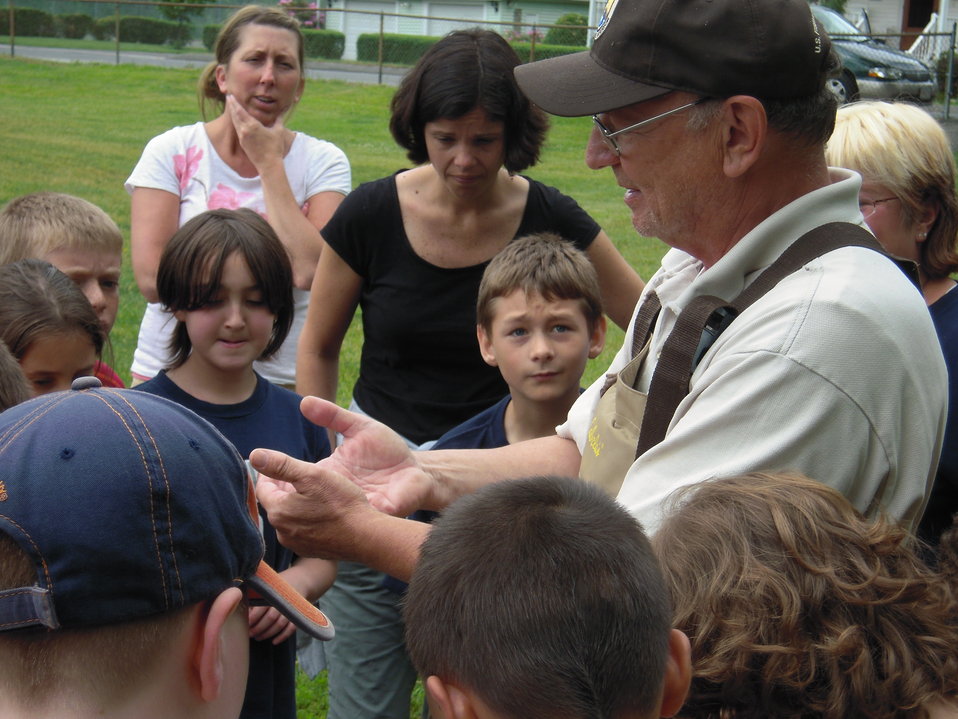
Novak showing female crayfish